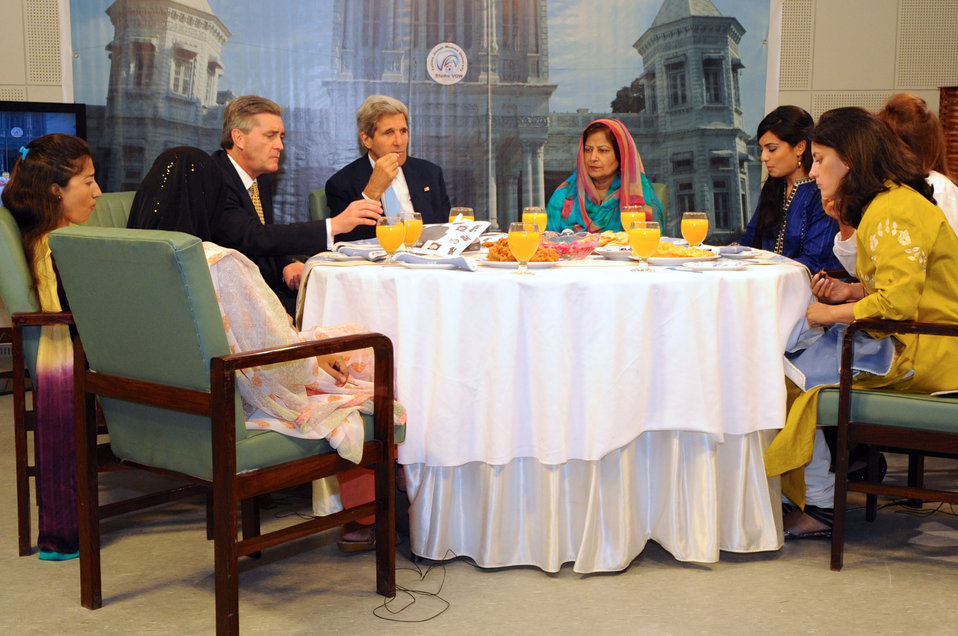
Secretary Kerry Breaks the Fast With Fatimah Jinnah Women's University Graduates

U.S. Secretary of State John Kerry breaks the daily Ramadan fast with an Iftar among a group of women graduates at the Fatimah Jinnah Women's University in Rawalpindi, Pakistan, during a visit on August 1, 2013.